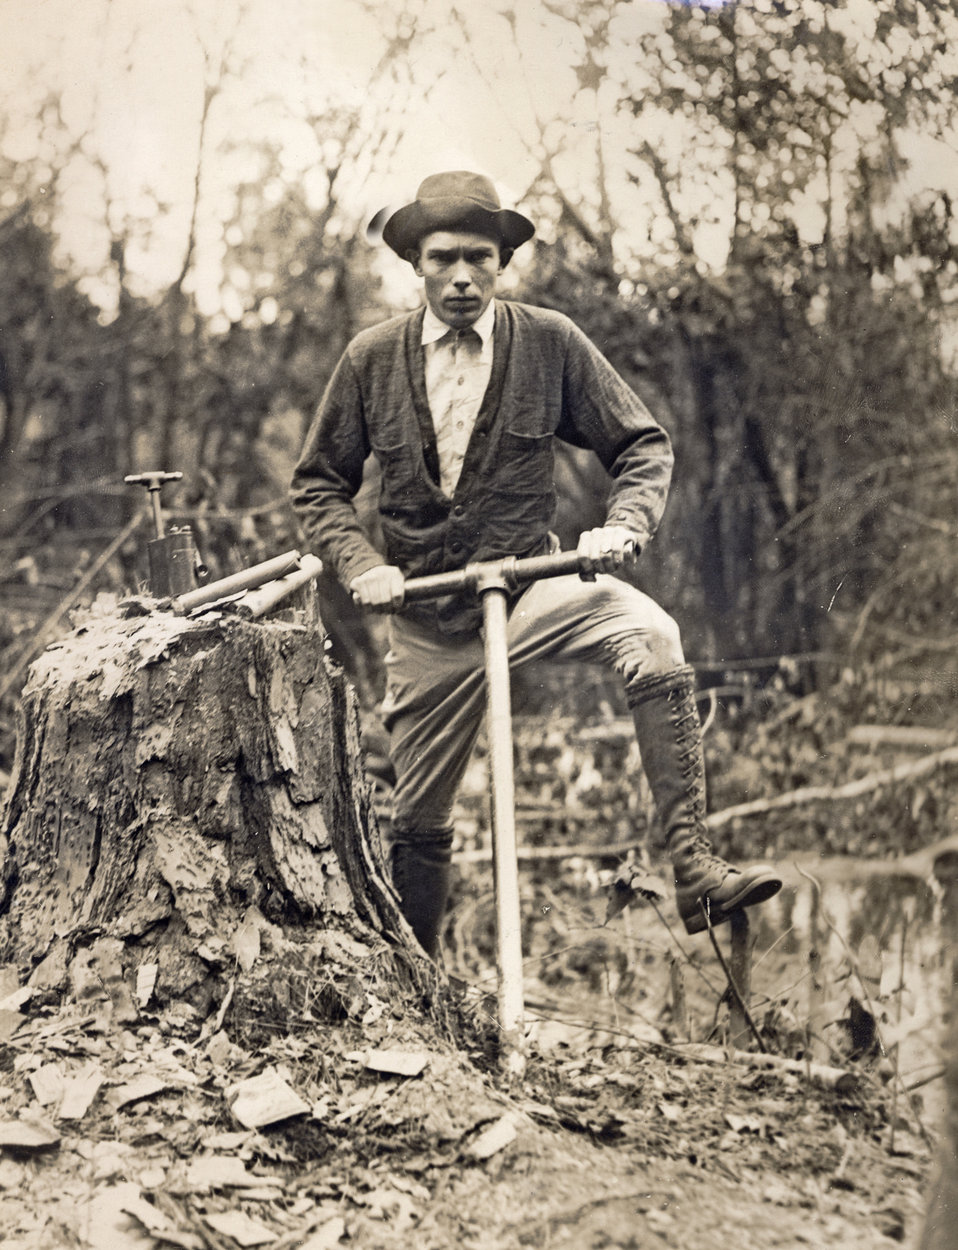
This 1920s photograph showed a malaria control health worker gripping a hand-held augur, and next to him, atop a tree stump were a number of sticks of dynamite and detonator. Stumps such as the one to his right, were removed using these explosives in order to make way for the creation of drainage ditches that would subsequently act as routes for the drainage of standing water.